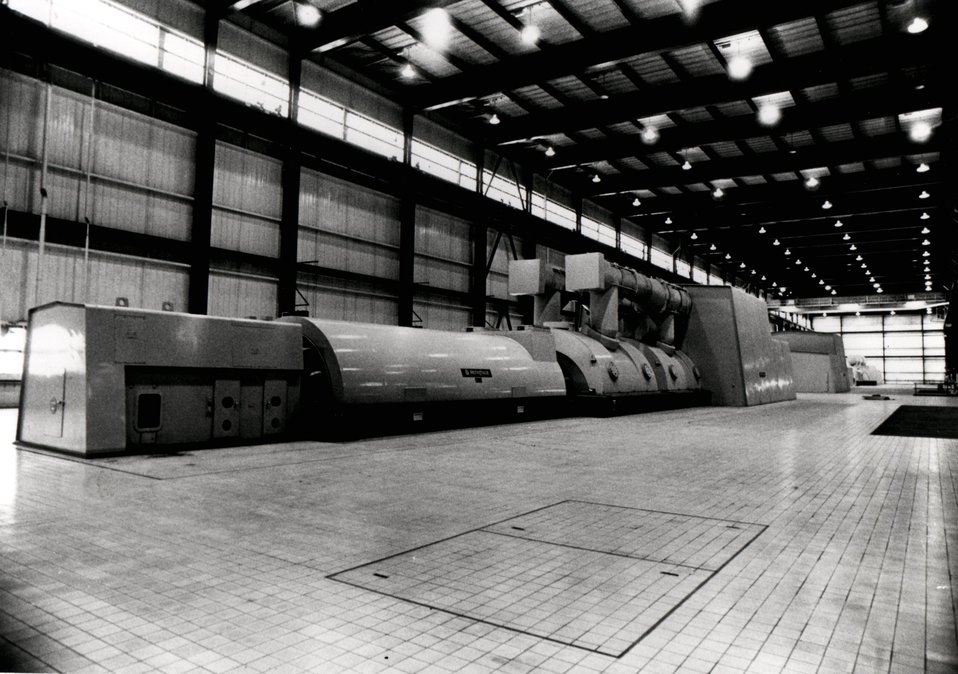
Generator room of a coal burning electric plant.